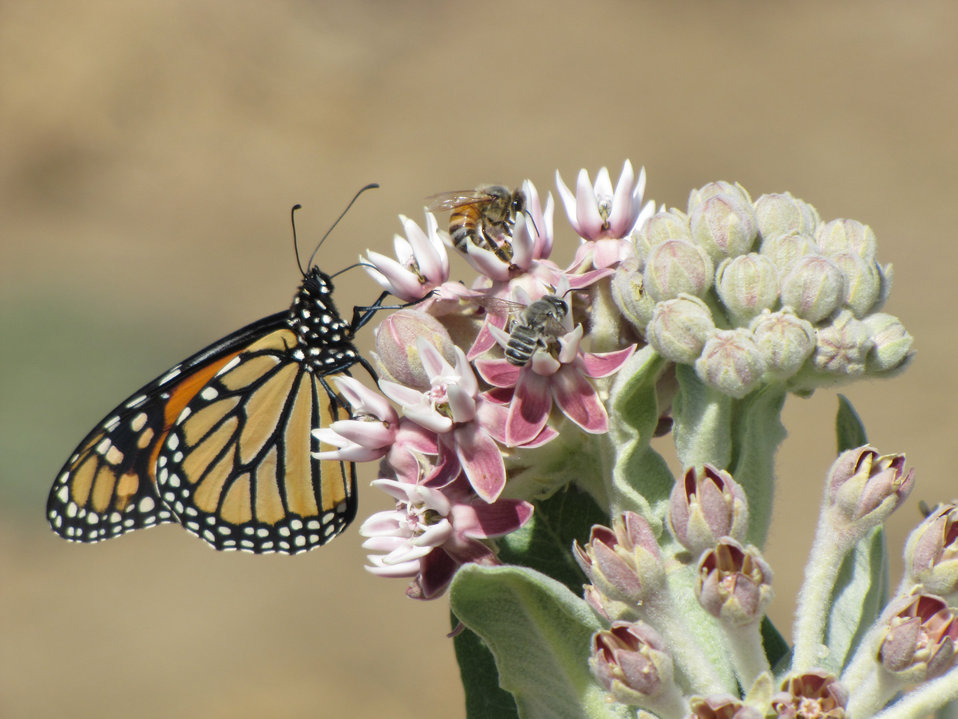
Monarch

A monarch butterfly, a honey bee and an alfalfa leafcutter bee gather nectar from a showy milkweed.